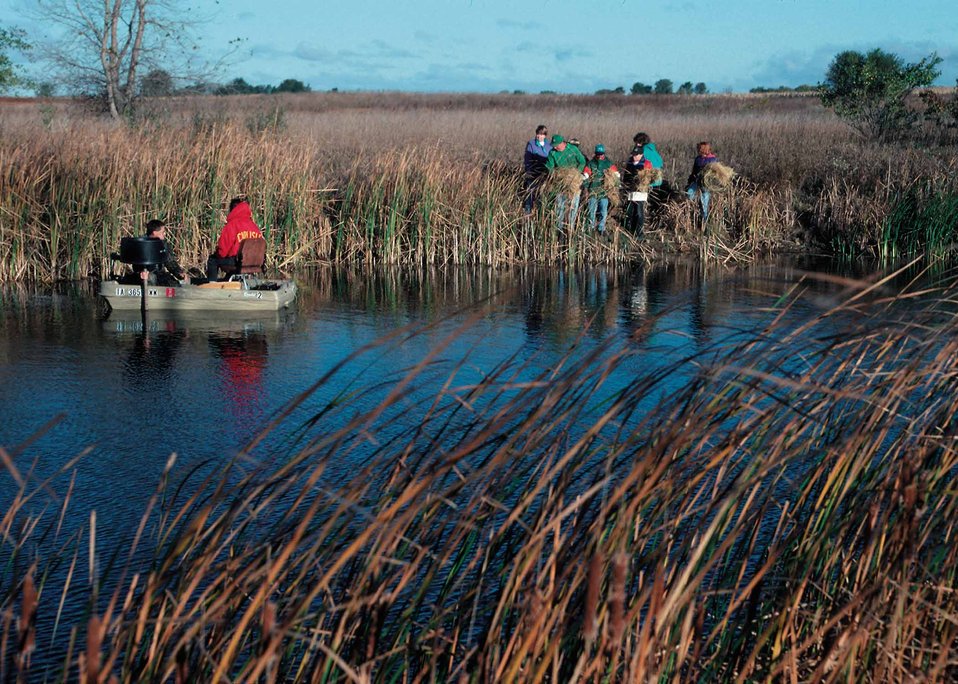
Volunteers put up a goose nest in a restored wetland in Story County, Iowa.